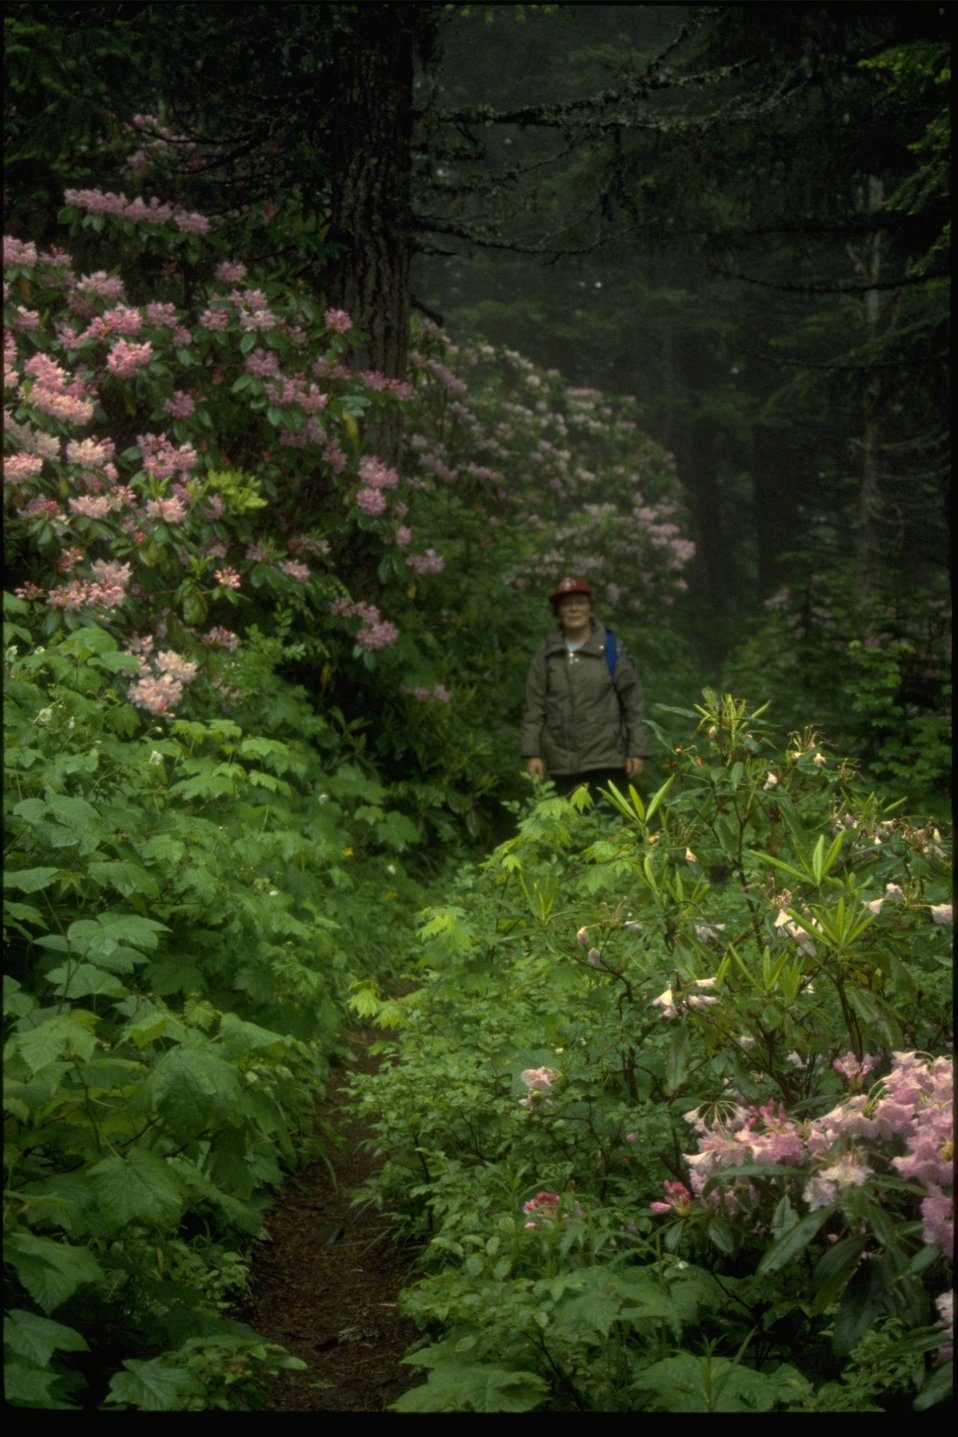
Table Rock Trail.